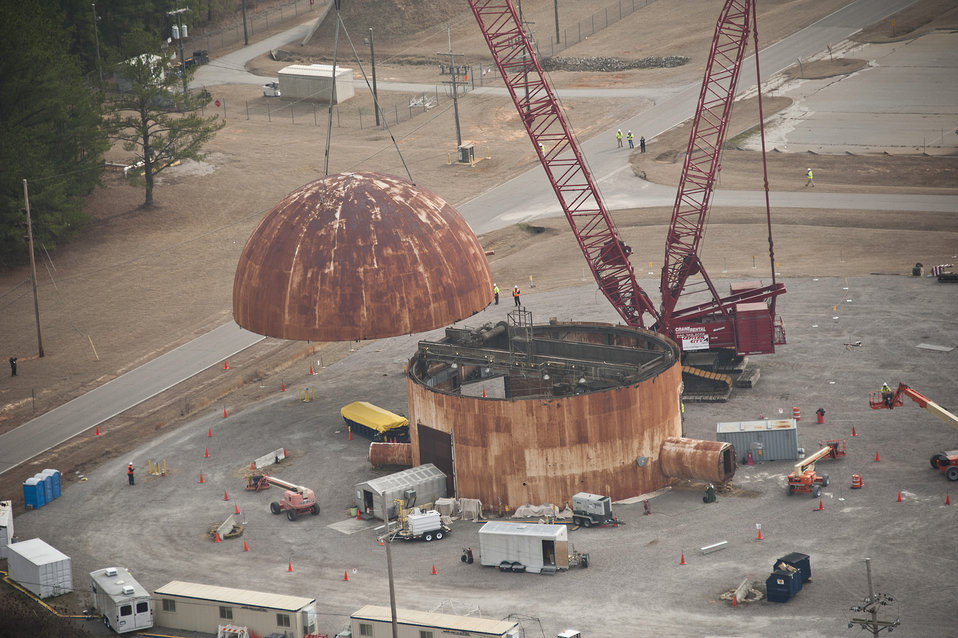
During Decommissioning - SRS

This photo shows the Savannah River Site’s Heavy Water Components Test Reactor during decommissioning.